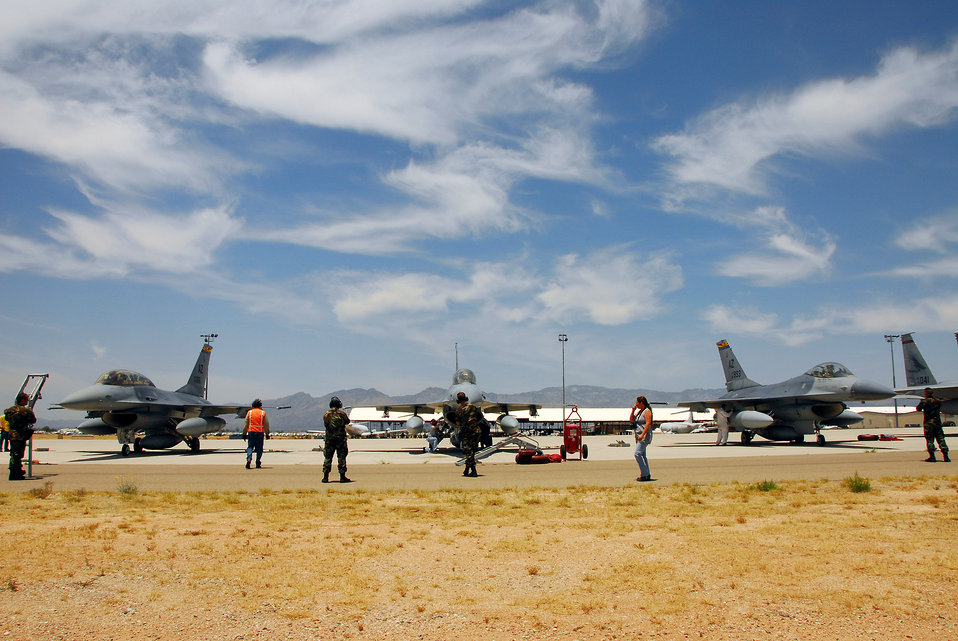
Air Guard retires last F-16A in service

The last F-16A in the Air Force, along with two F-16Bs are parked on the ramp at Davis-Monthan Air Force Base, Ariz., awaiting transfer to the Aerospace Maintenance and Regeneration Group at Davis-Monthan for indefinite storage. The aircraft are being retired by the Arizona Air National Guard's 162nd Fighter Wing which now flies the more modern F-16 C and F-16D models.